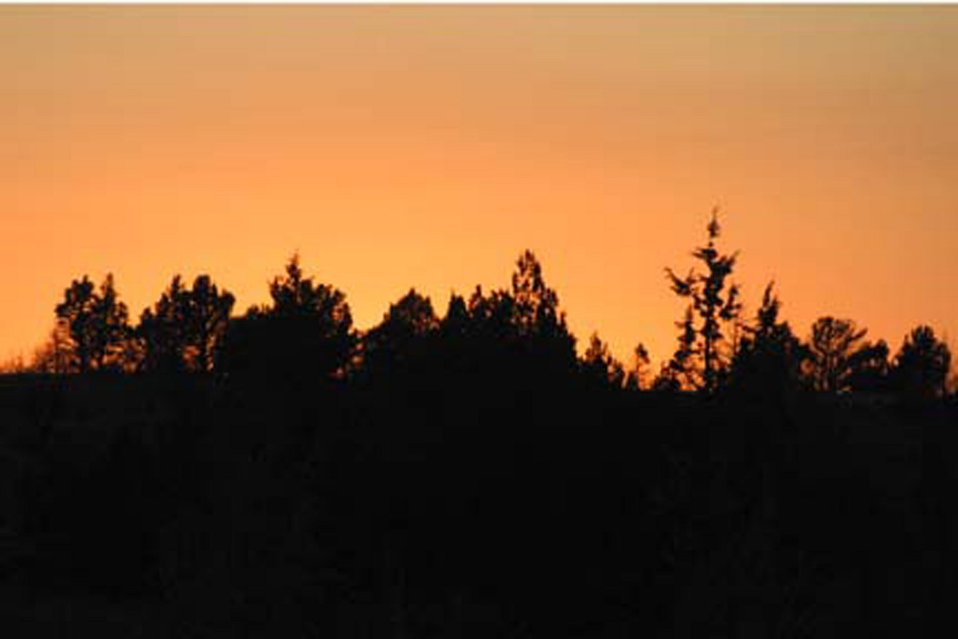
Sun set in the Kiger Wild Horse Viewing Area.